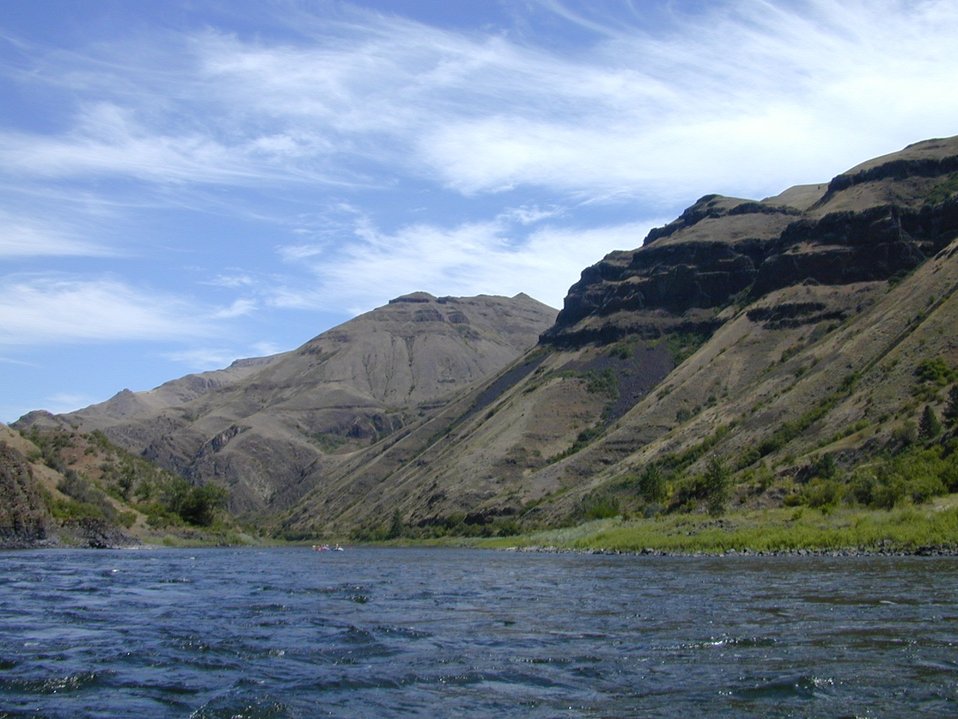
Recreation Rafting on Lower Salmon River Cottonwood Field Office UCSC Upper Columbia Salmon Clearwater District